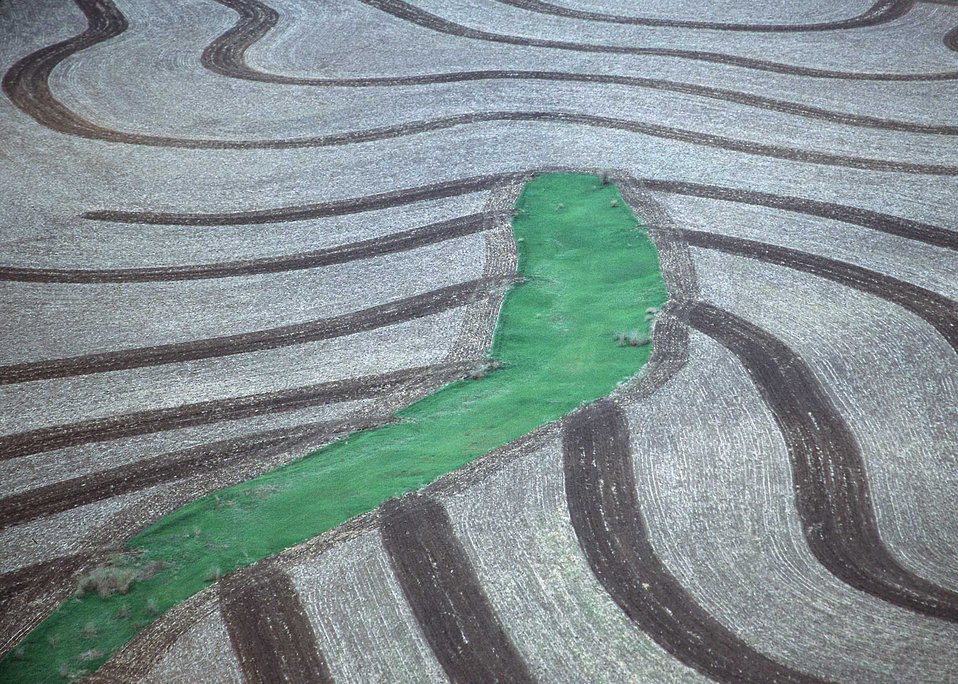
Aerial view on contour terraces and grassed waterways for erosion control. Kansas.